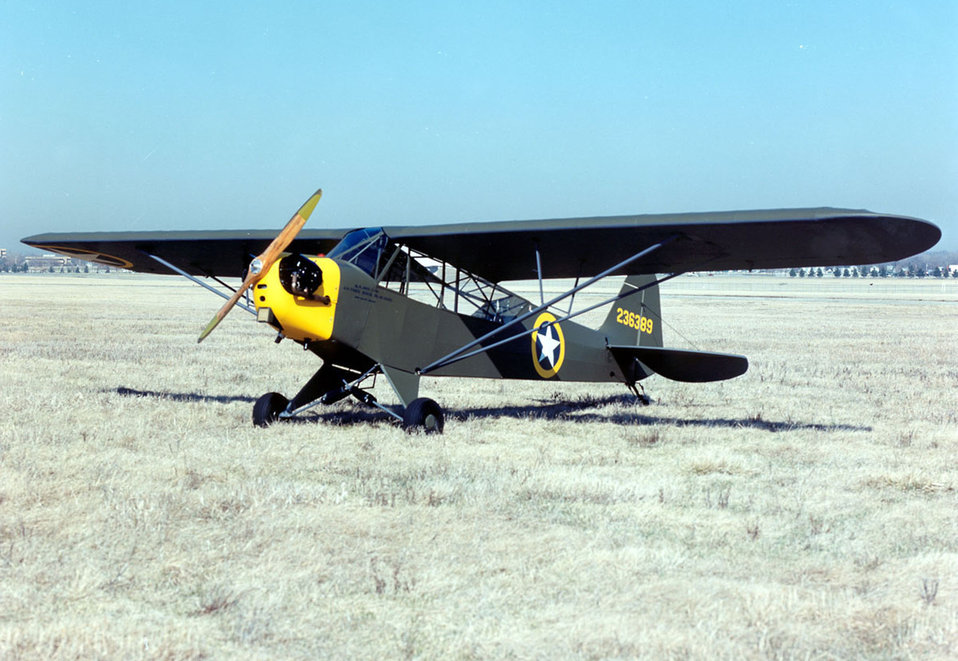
Liaison Aircraft Fly-In scheduled for Oct. 7-8

The Piper L-4 Grasshopper is shown at the National Museum of the United States Air Force.